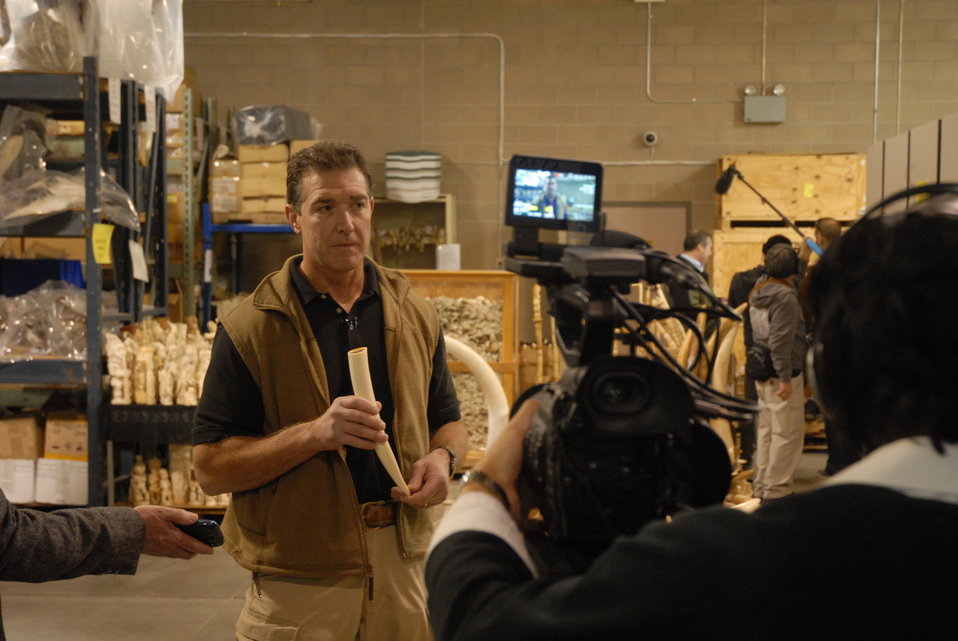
Steve Oberholtzer, USFWS Special Agent in Charge, Office of Law Enforcement discussing the illegal ivory trafficking with reporters.